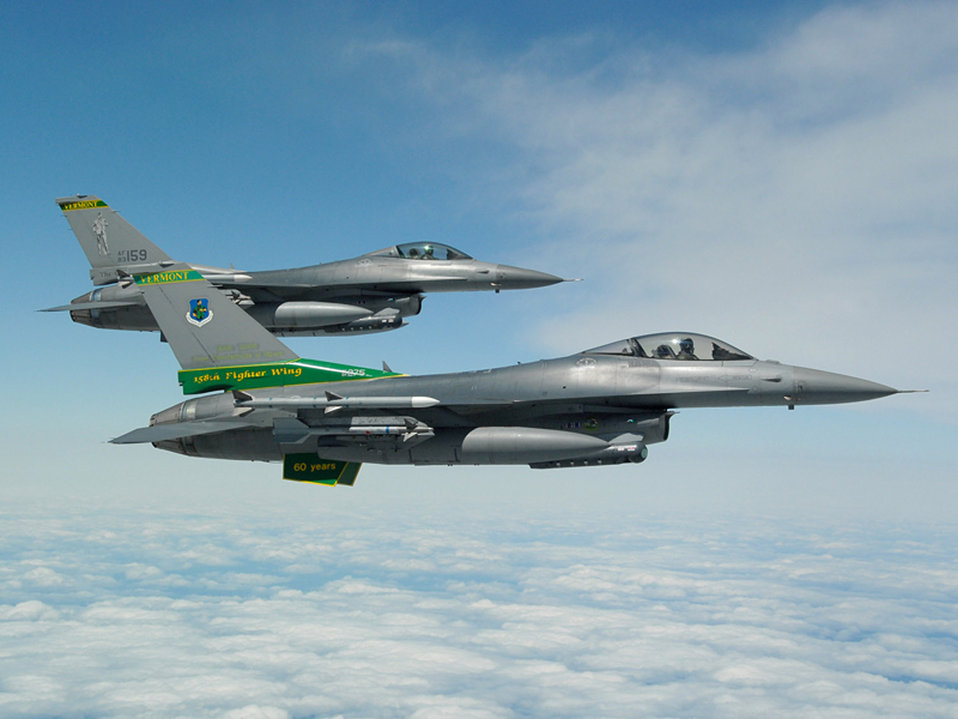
Air Force Week New England kicks off at Pease Air National Guard Base

Two F-16 Fighting Falcons from the Vermont Air National Guard's 158th Fighter Wing participate in a special event held June 6 to promote Air Force Week New England which will take place in August.